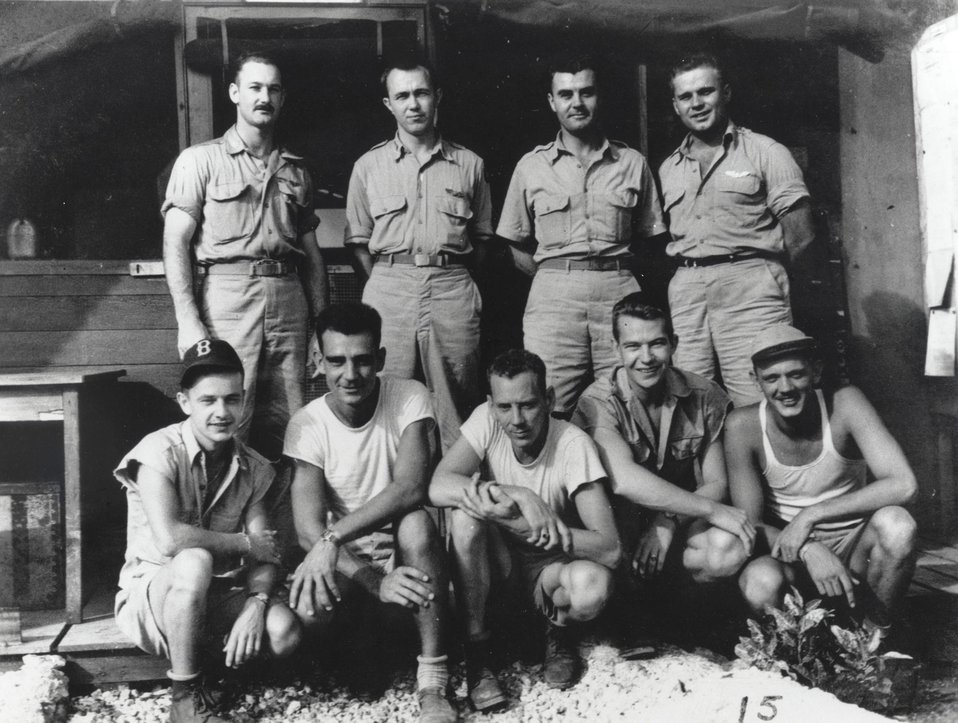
ENOLA GAY'S CREW (P- COLLECTION)